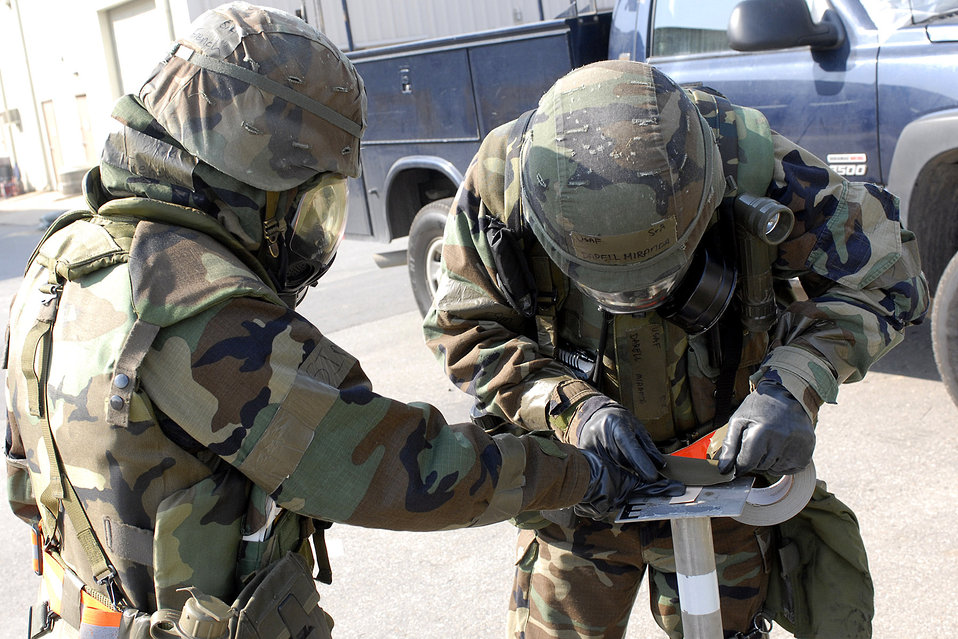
Testing readiness at Kunsan

Senior Airmen Darrell Miranda and Manda French check M-8 paper for signs of possible chemical contamination during a general release after a simulated missile attack during the Peninsula Operational Readiness Exercise Nov. 8 at Kunsan Air Base, South Korea. The exercise was conducted to ensure base members remain ready to execute its mission. Airmen French and Miranda are assigned to the 8th Civil Engineer Squadron.